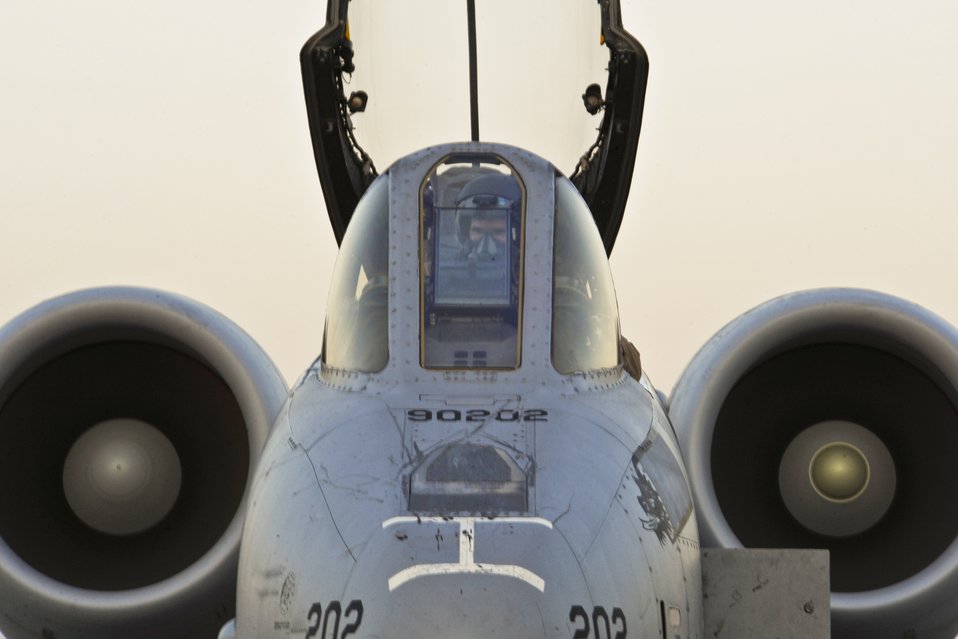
Here's looking at you

Capt. Richard Wilson, an A-10 Thunderbolt II pilot with the 354th Expeditionary Fighter Squadron at Kandahar Airfield, Afghanistan, conducts his pre-flight inspection Dec. 27, 2009.